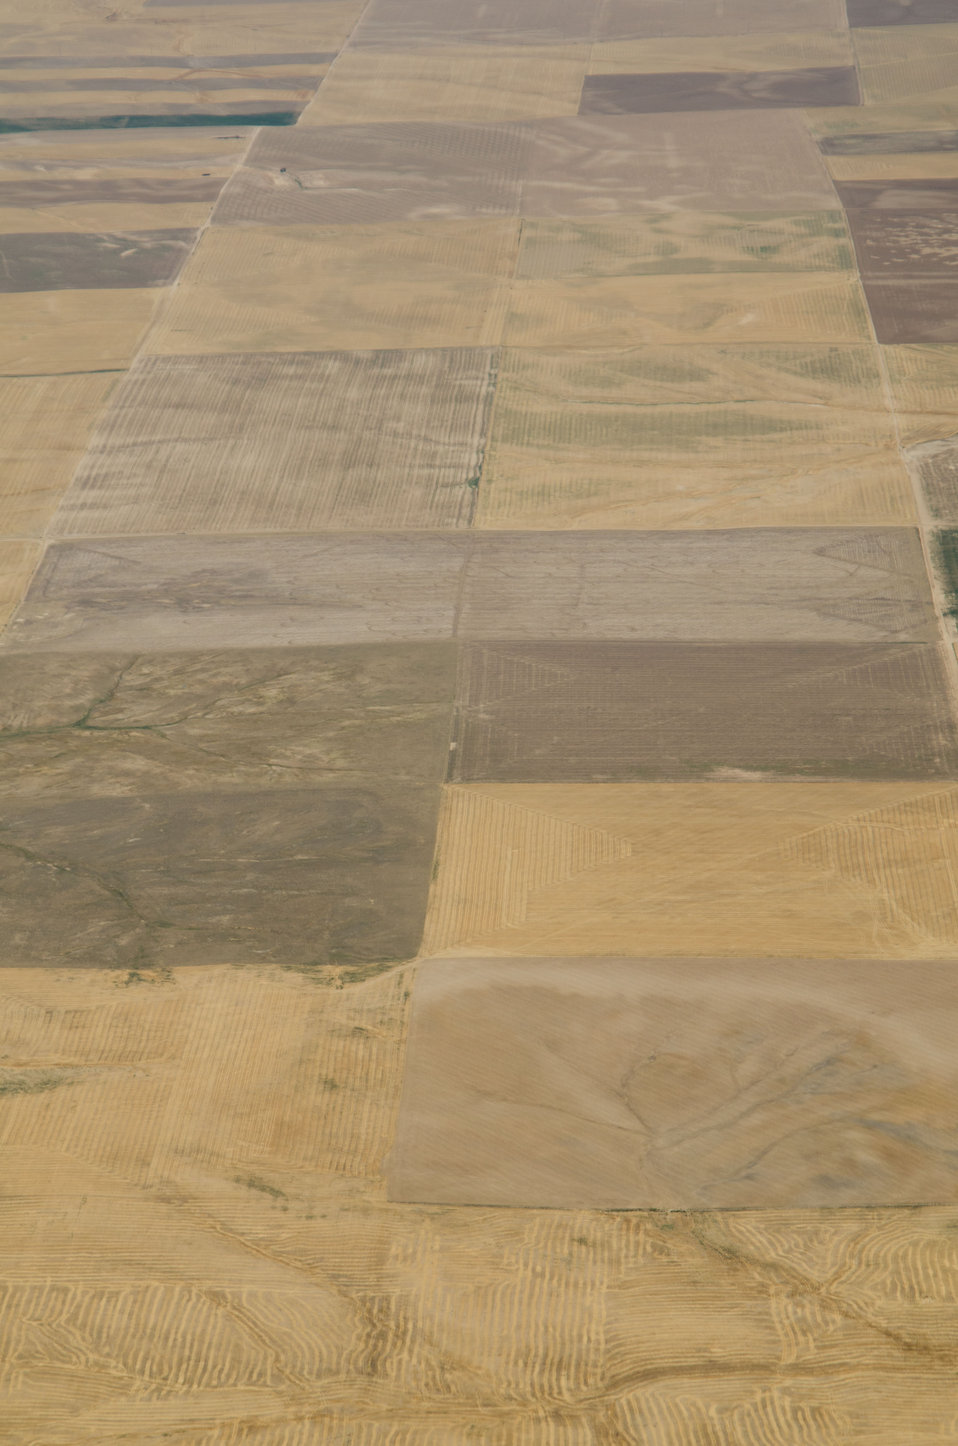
Aerial views of drought affected Colorado farm lands, 89 miles east of Denver, Colorado on Saturday, July 21, 2012. Green areas are irrigated, the yellow areas are dryland wheat crops.